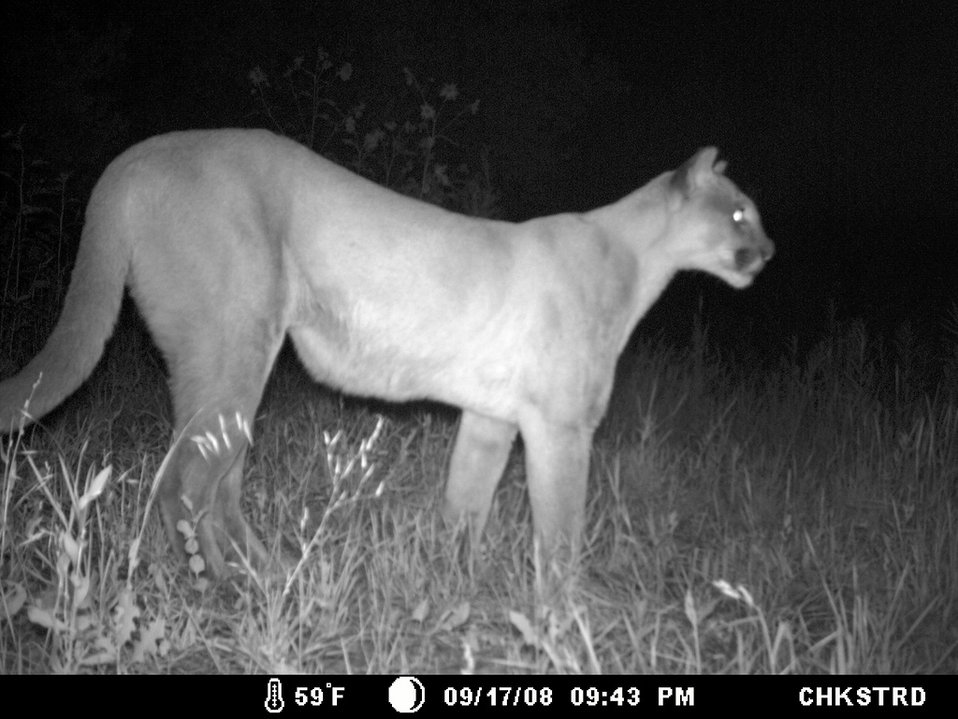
mountain lion

Bosque del Apache National Wildlife Refuge, NM
Camera trap project by Matt Farley, Jennifer Miyashiro, and J.N. Stuart.